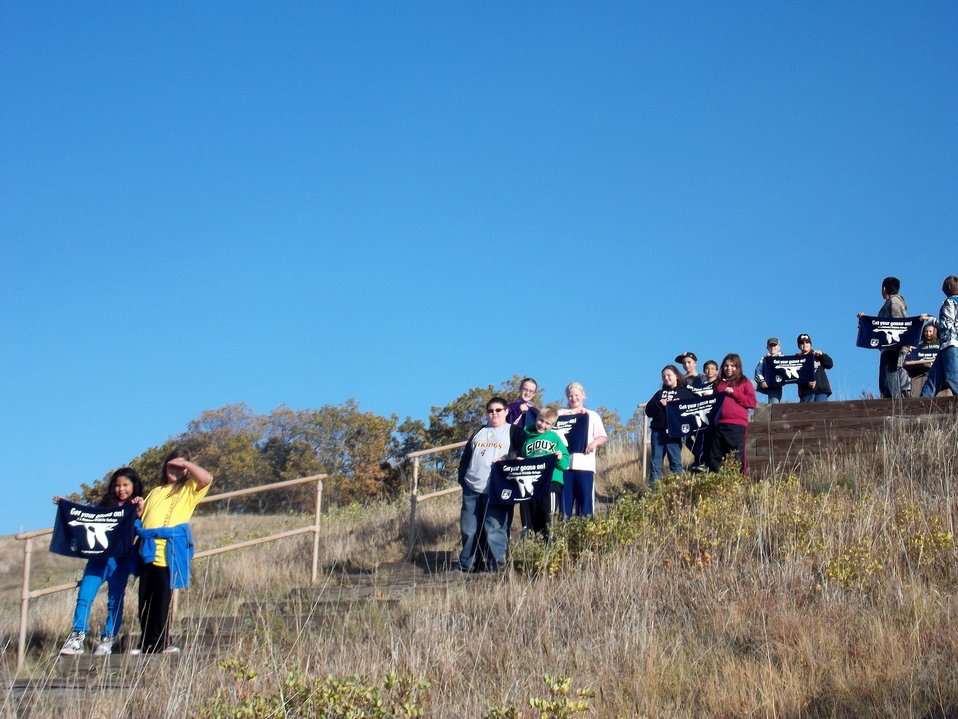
Get Your Goose On!

Photo taken at Sullys Hill National Game Preserve.